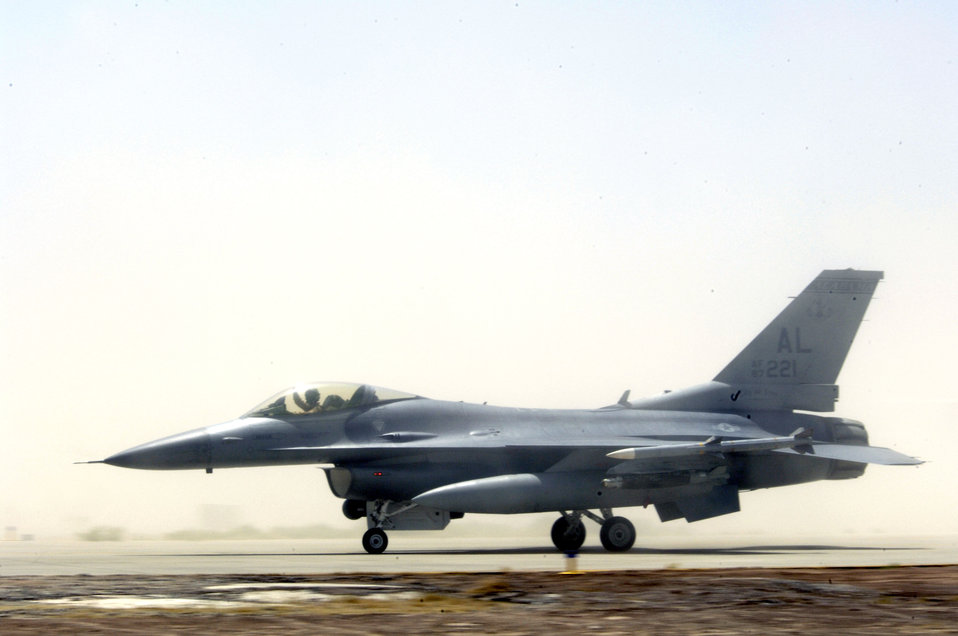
Falcon in the desert

An F-16 Fighting Falcon taxis before taking off on a mission in support of Operation Iraqi Freedom at Balad Air Base, Iraq, on July 11.